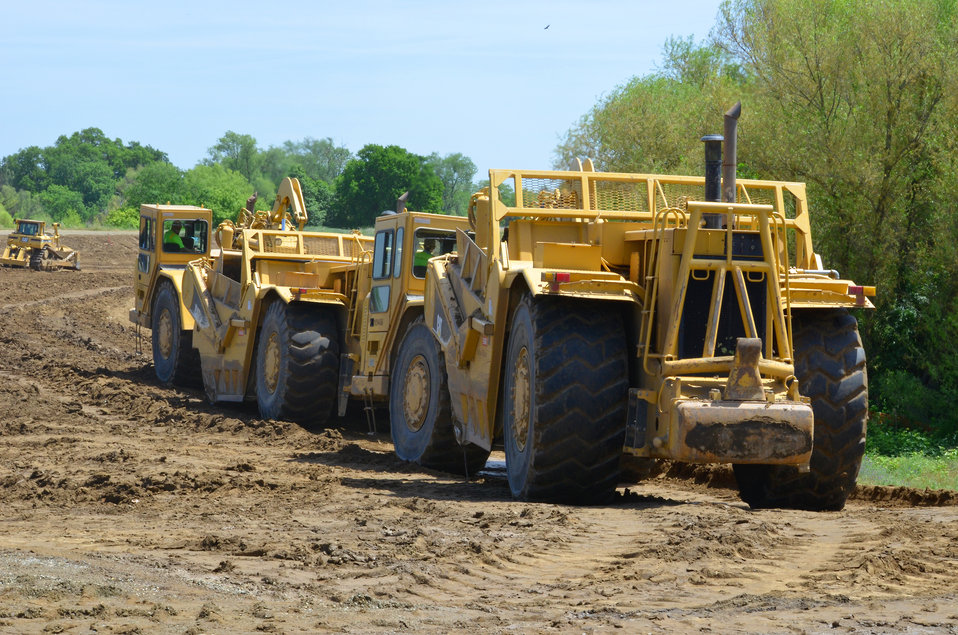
Hawk flies above tandem wheel tractor-scrapers

Tandem wheel tractor-scrapers haul material during levee construction April 30, 2012, near South River Road in West Sacramento, Calif. The U.S. Army Corps of Engineers Sacramento District is working to complete a setback levee and install a seepage cutoff wall in the levee’s center, further reducing the city’s flood risk. Flying in the distance, is one of two migratory hawks nesting near the construction site. District biologists are monitoring the hawks during the levee work since they arrived after construction resumed this spring, and are protected under the Migratory Bird Treaty Act of 1918.